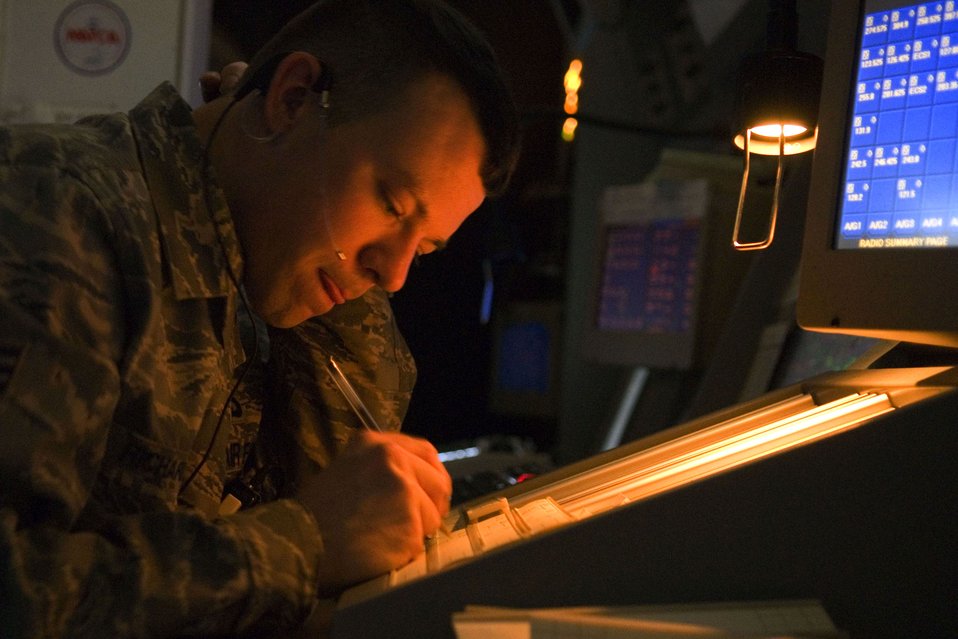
Directing traffic

Senior Airman Doug Richardson documents aircraft movement Jan. 18 at Balad Air Base, Iraq. Air traffic controllers stationed at Balad AB help manage air traffic throughout the area of responsibility. Airman Richardson is a 332nd Expeditionary Operation Support Squadron air traffic controller deployed from Luke Air Force Base, Ariz.